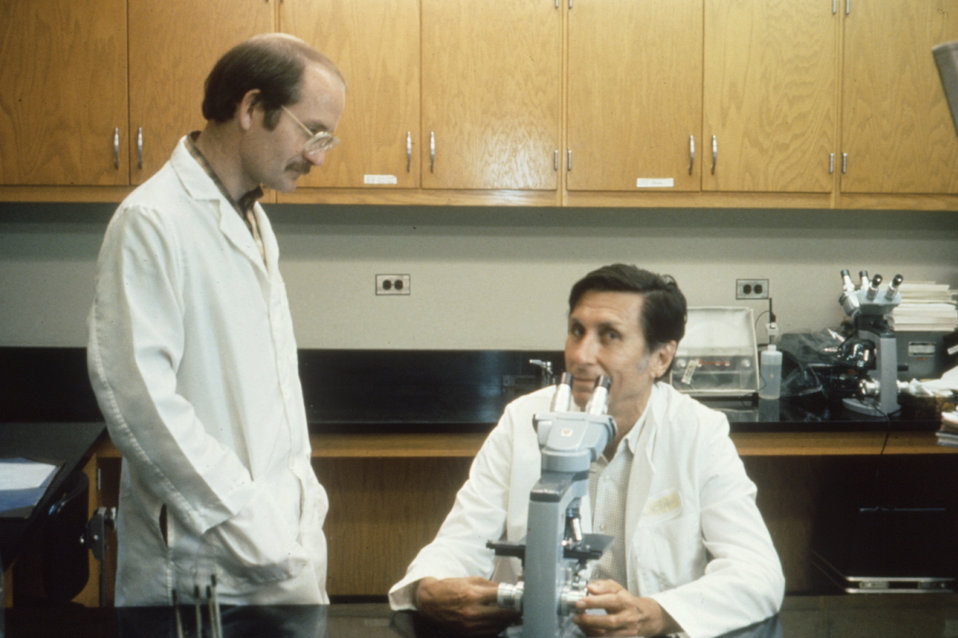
This is a 1977 image of Joseph E. McDade, Ph.D. (Lt.), and Charles C. Shepard, M.D. (Rt.), in CDC's Leprosy and Rickettsia labs.